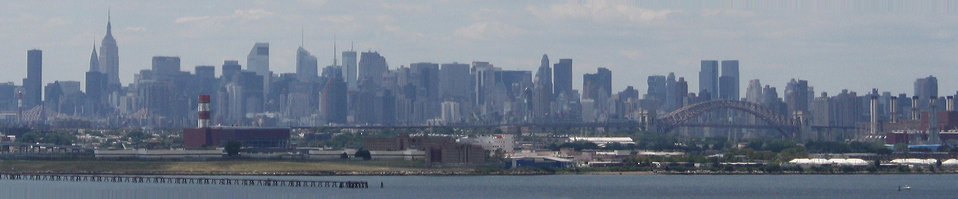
New York City Skyline

The Port of New York has the largest volume of wildlife imports and exports in the country. Inspectors from the Valley Stream, N.Y. Office of Law Enforcement oversee wildlife products coming into and leaving the U.S.